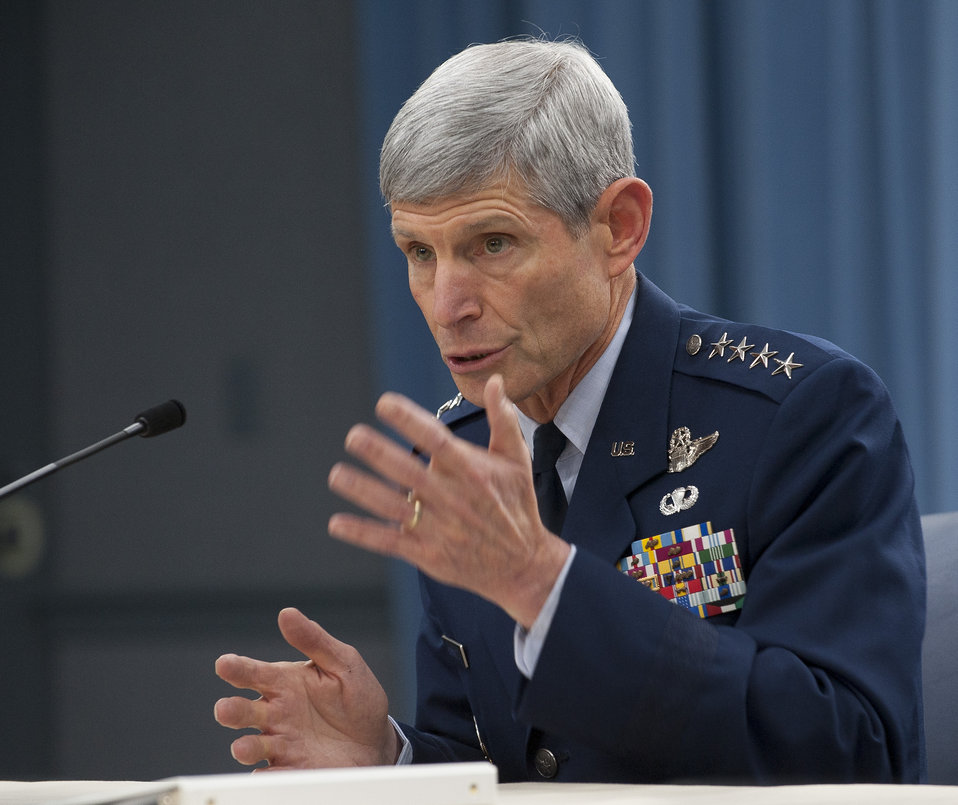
Air Force will thrive

Air Force Chief of Staff Gen. Norton Schwartz responds to questions in the Pentagon on July 24, 2012, during a media availability to discuss during his time as Chief of Staff. Schwartz, who finishes a four-year term in office shortly, said he believes the Air Force will continue to thrive despite fiscal challenges.